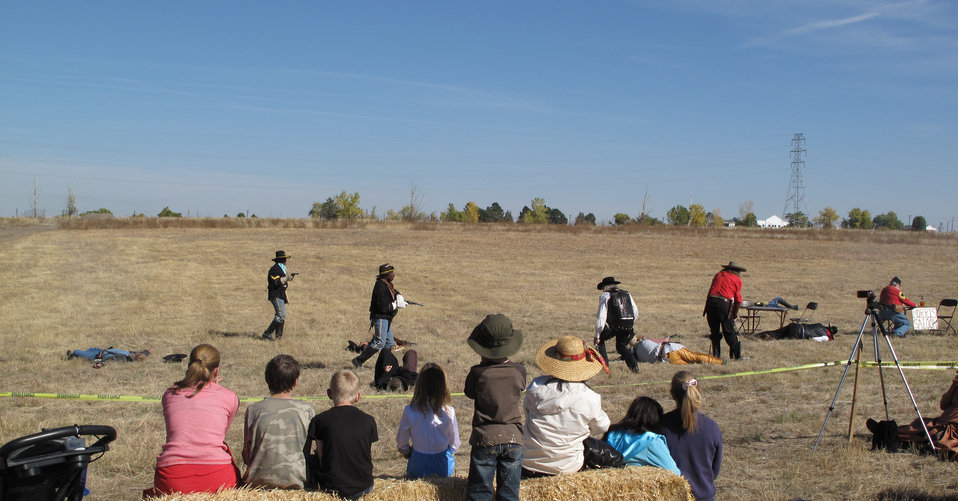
Refuge Round-up 2010

Saloon reenactment at the Rocky Mountain Arsenal.